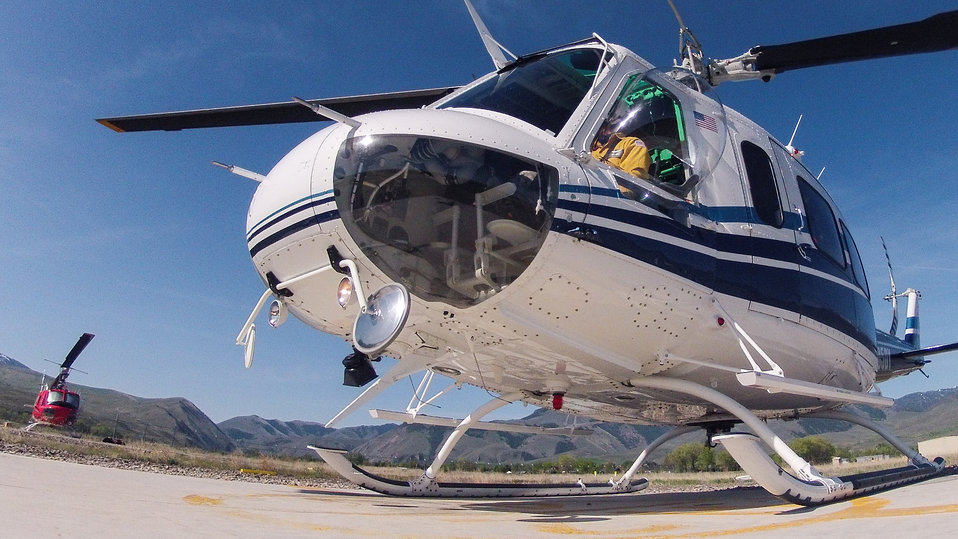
Idaho Helicopters, Inc., Assistant Chief Pilot JT Theis lands a Bell 205A-1 helicopter, so veteran wildland firefighter rappellers can come onboard to train and prepare at the U.S. Department of Agriculture (USDA) U.S. Forest Service (USFS) National Helicopter Rappel Program’s Rappel Academy at Salmon Air Base in Salmon, ID on Wednesday, May 14, 2014. From May 12, 2014, 72 veteran rappellers from all over the nation, 30 support staff, and three helicopters with flight crews attend the training at Salmon Air Base. Participants will rappel into the Perreau Creek area. The annual training is delivered in accordance with the National Rappel Operations Guide; strengthen leadership, teamwork, and communications within the rappel community, and produces quality aerial delivered firefighters for use in fire and aviation operations. The USDA Forest Service National Helicopter Rappel Program’s primary mission is initial attack. Rappel crews may be utilized for large fire support, all hazard incident operations, and resource management objectives.